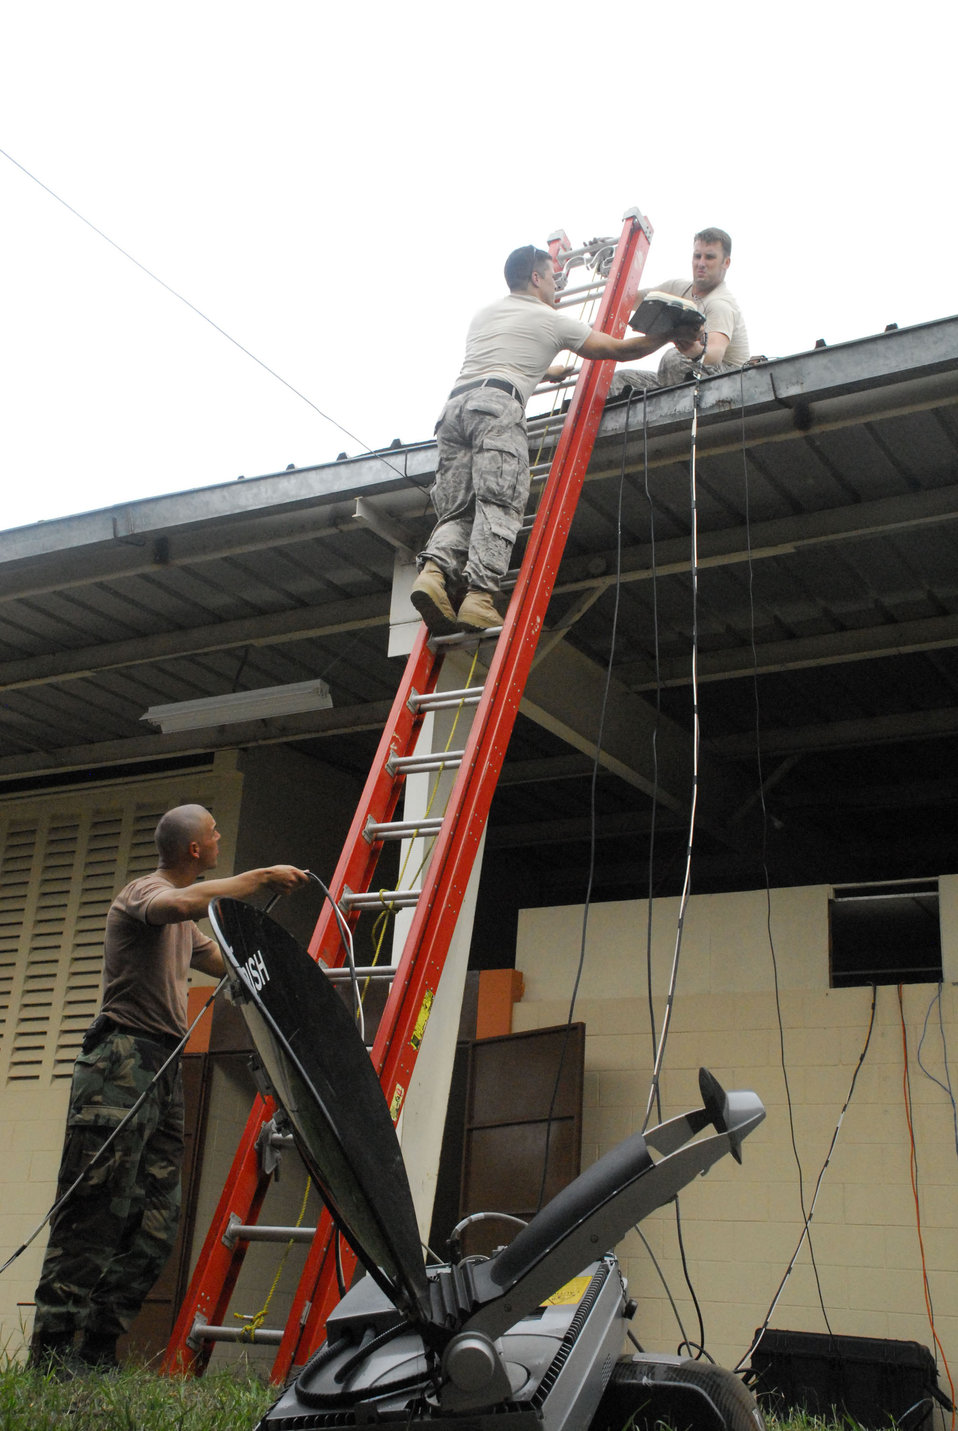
Servicemembers support El Salvador disaster relief exercise

Tech. Sgt. Mike Vaughn (left to right), Capt. Ernesto Garcia and Tech Sgt. Jeff Scott run antennas to the roof of Salvadoran air force facility to establish communications at their home-away-from-home May 4 at Comalapa Air Base, El Salvador. The American servicemembers are involved in the U.S. Southern Command and Salvadoran Ministry of Defense-sponsored disaster relief exercise.